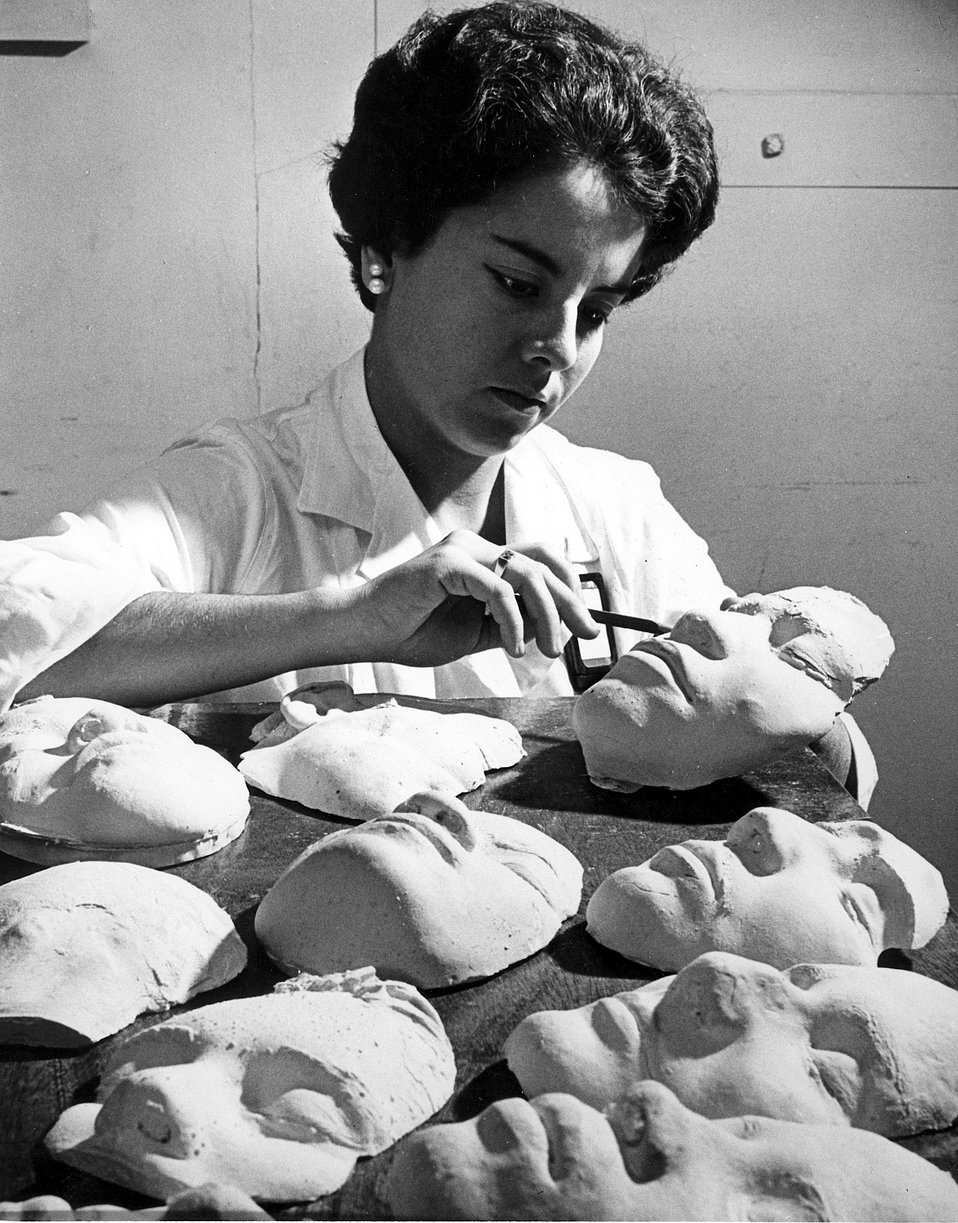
A staff assistant inspects newly made masks of patients undergoing treatment at the Puerto Rico Radiotherapy and Cancer Division of the Puerto Rico Nuclear Center. Circa 1969.